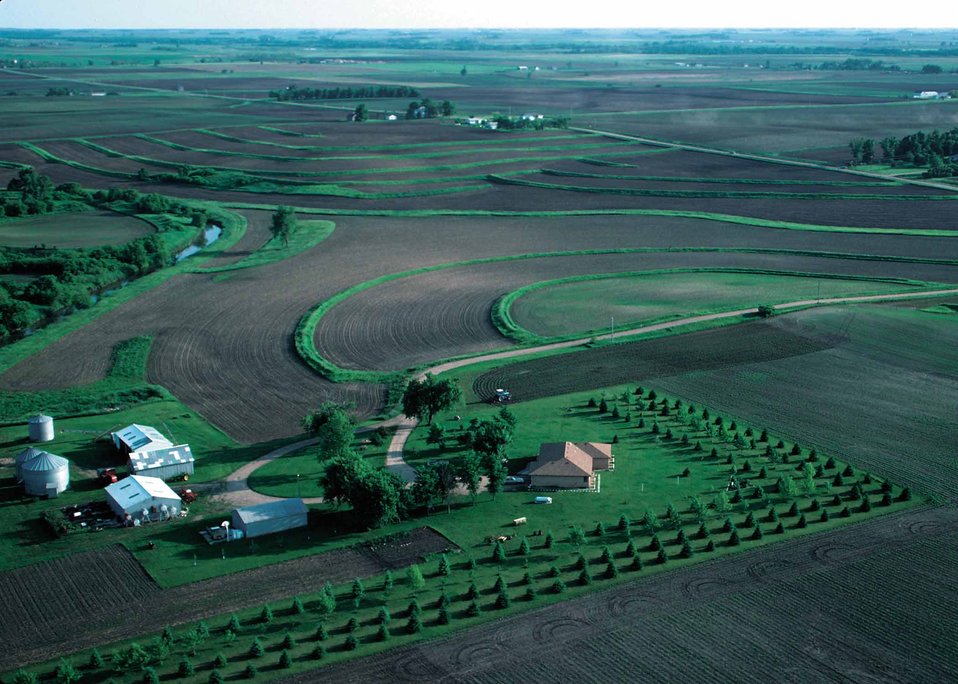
An extensive farmstead windbreak, terraces, grassed waterways, conservation buffers and conservation tillage combine to protect this farm in Woodbury County in western Iowa.